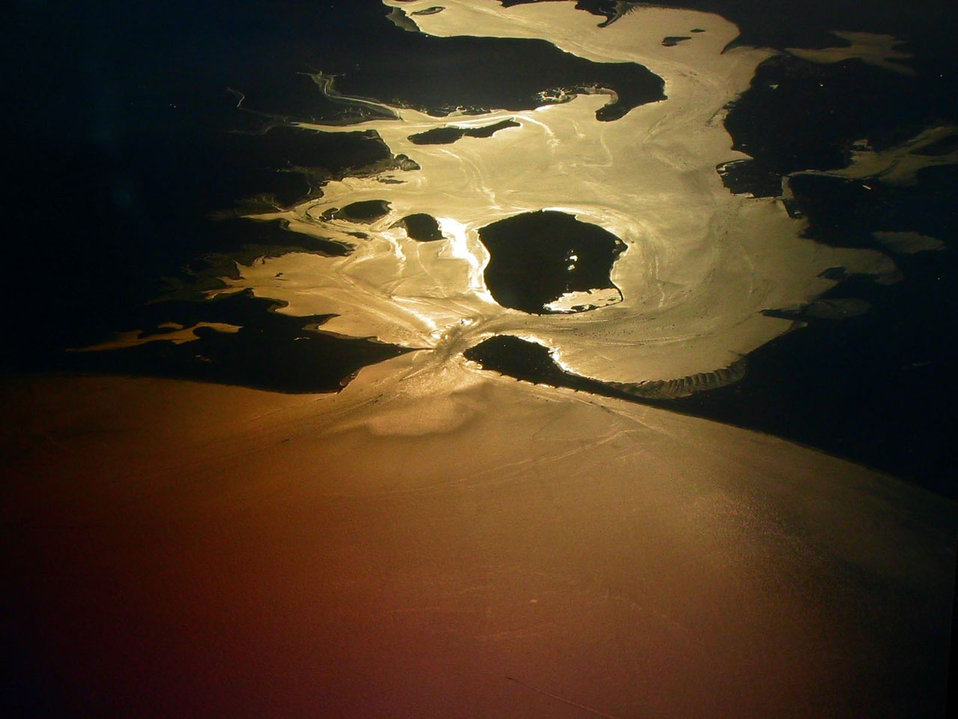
Poole harbour at sunset. a picture from the plane..